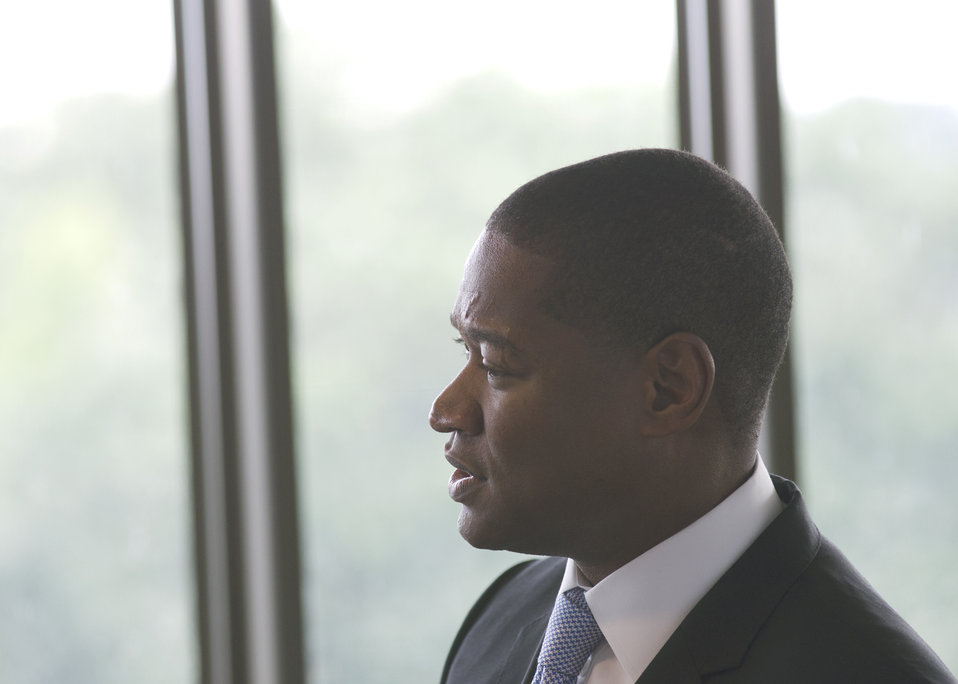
U.S. Department of Agriculture’s (USDA) Foreign Agricultural Service (FAS) Office of Civil Rights Director Daniel Whitley speaks at the first business meeting of USDA’s Council for Native American Farming and Ranching (CNAFR) held at the first business meeting of the U.S. Department of Agriculture’s (USDA) Council for Native American Farming and Ranching (CNAFR) held at the National Museum of the American Indian in Washington, D.C., on Tuesday, Aug. 14, 2012. CNAFR was created to advise the Secretary on ways to eliminate barriers to participation for Native American Farmers and Ranchers in USDA programs. The Council was established as part of the Keepseagle settlement, and is conducted under the oversight of USDA's Office of Tribal Relations under the Office of the Secretary of Agriculture.